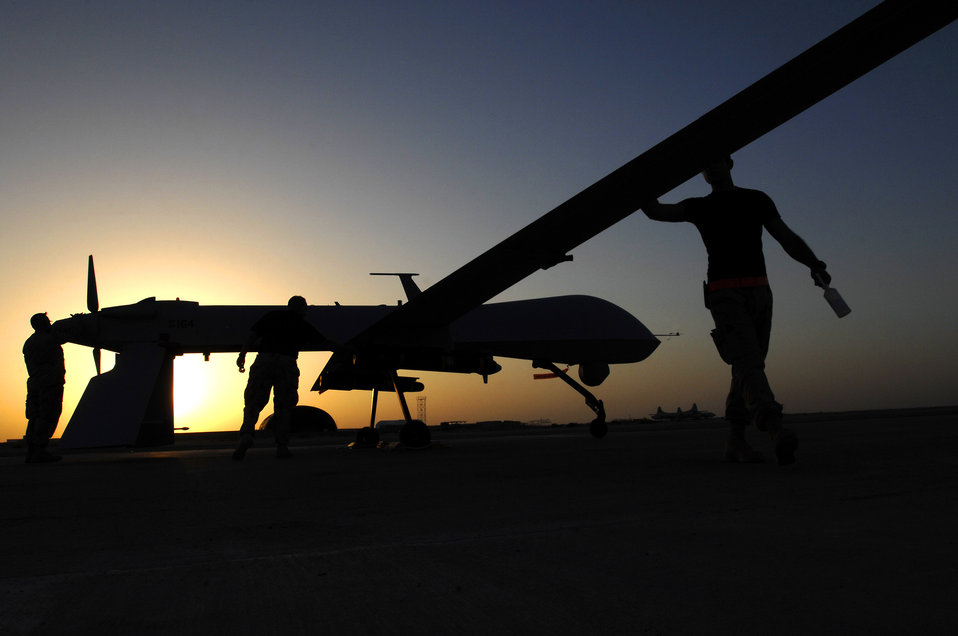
Everything checks out

Airman 1st Class Justin Cole, Tech. Sgt. Marcus Cottengim and Chief Master Sgt. Roy Cupper pre-flight an MQ-1 Predator unmanned aerial vehicle Nov. 5 at Ali Base, Iraq. The Predators are now fully operational and have begun 24-hour operations. The Airmen are deployed from Creech Air Force Base, Nev.